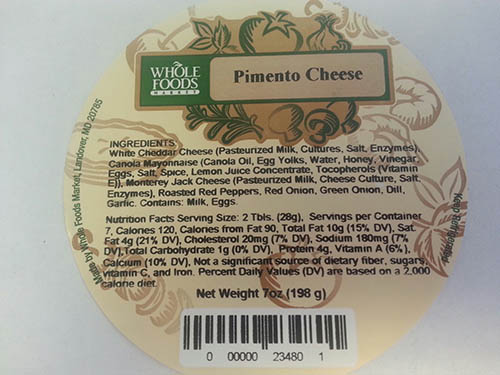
RECALLED – Pimiento Cheese

July 17, 2013 – Product Recall – Whole Foods Market’s Mid-Atlantic Region Recalls Pimiento Cheese Due to Undeclared Egg.